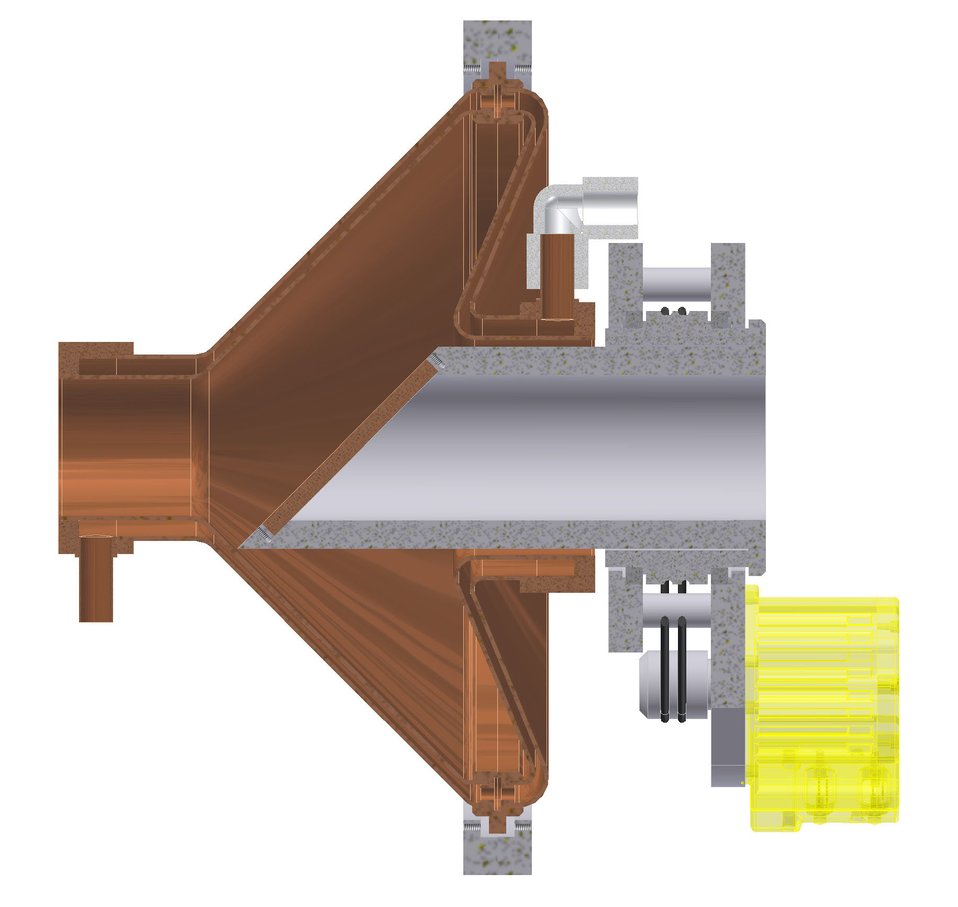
Nanotube; Laser